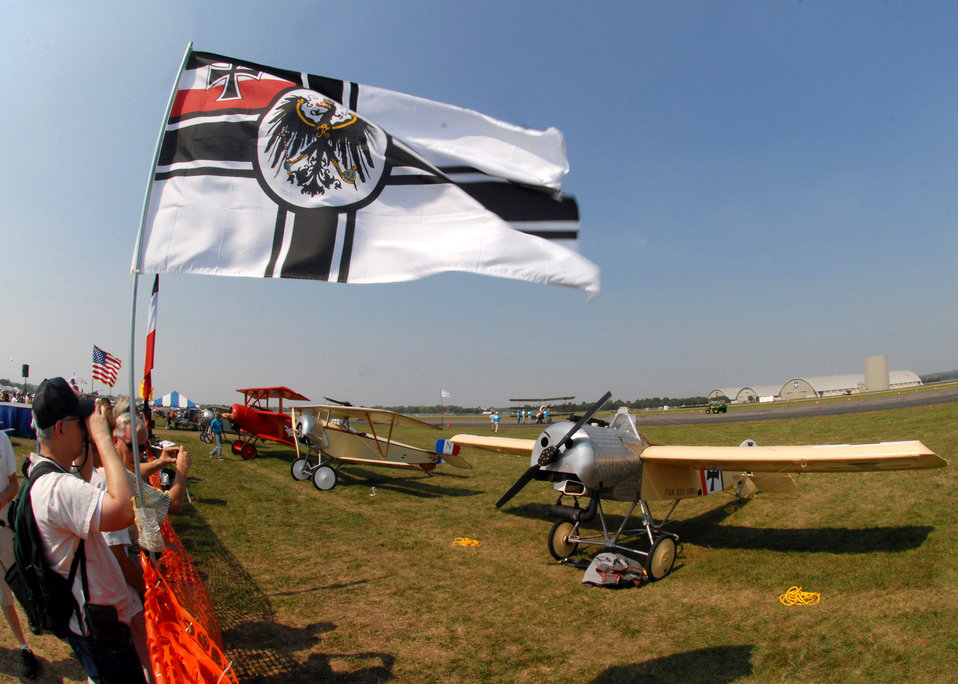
World War 1 Fly In

Out on the runway (in backbround) a ground crew attempts to start a Sopwith triplane while spectators watch at the Dawn Patrol Rendezvous World War I Fly-In Sept. 22 on the grounds of the National Museum of the United States Air Force in Dayton, Ohio. Activities included period re-enactors in a war encampment setting, era automobiles on display and participating in a parade, flying exhibitions by WWI radio-controlled aircraft, and a collector's show for WWI items.